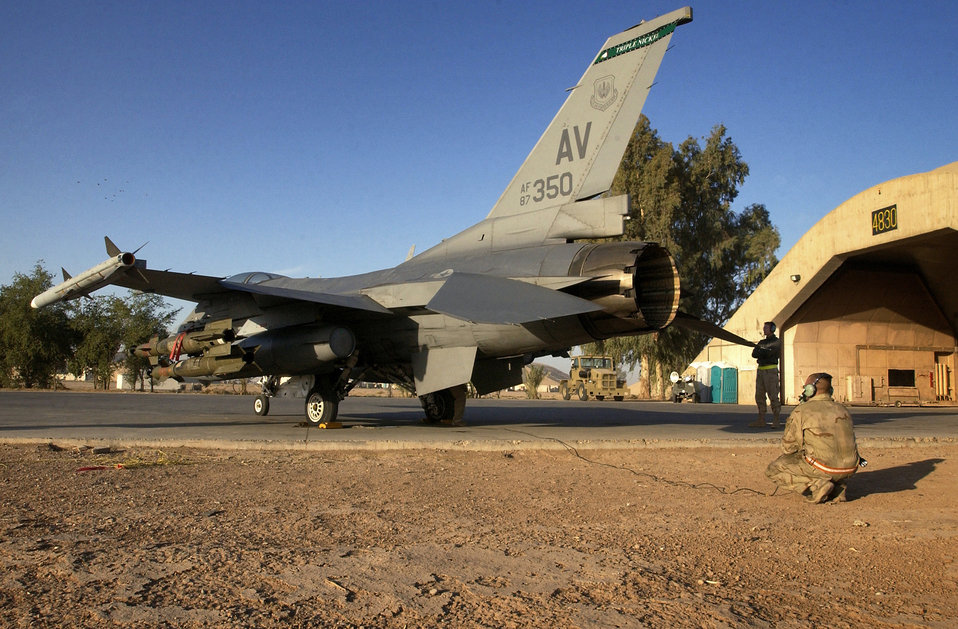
Falcon fixers

BALAD AIR BASE, Iraq -- Senior Airman Jason Scott Hall acts as a launch assistant for an F-16 Fighting Falcon pilot taxiing for a mission. Airman Hall is with the 332nd Expeditionary Aircraft Maintenance Squadron.